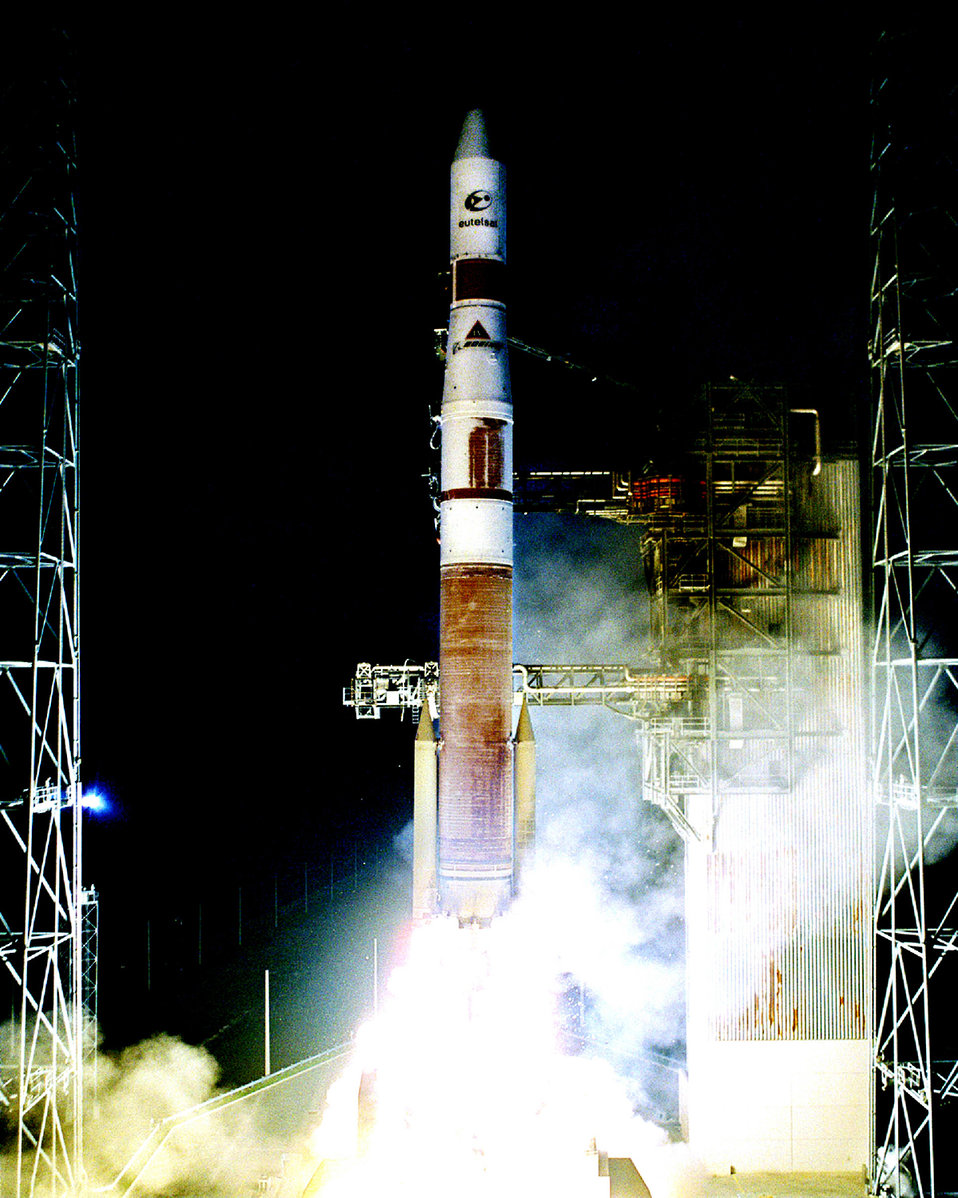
Space access vital to warfighting efforts

CAPE CANAVERAL, Fla. -- A Delta IV rocket lifts off from Cape Canaveral, Fla. According to Peter B. Teets, undersecretary of the Air Force and director of the National Reconnaissance Office, access to space is better than ever before, but increased reliance on space-based assets means the nation must look to the next generation of evolved expendable launch vehicles to replace current systems like the Delta IV and the Atlas V rockets.